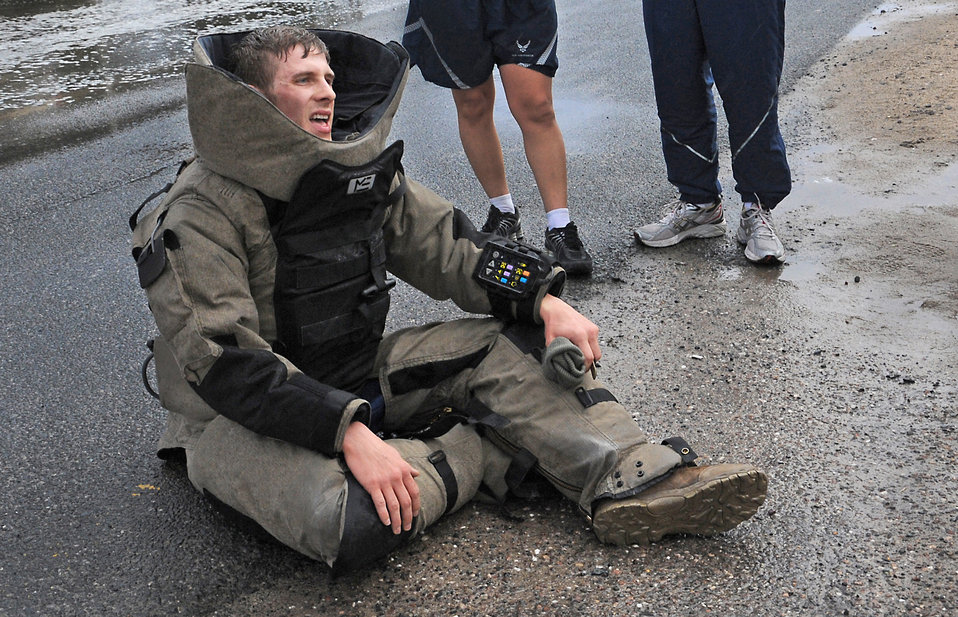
Southwest Asia fun run

Staff Sgt. Robin Cunningham rests in his bomb suit after participating in the explosive ordnance disposal fun run Dec. 31, 2010, at a base in Southwest Asia. Sergeant Cunningham is an EOD journeyman with the 386th Expeditionary Civil Engineer Squadron.